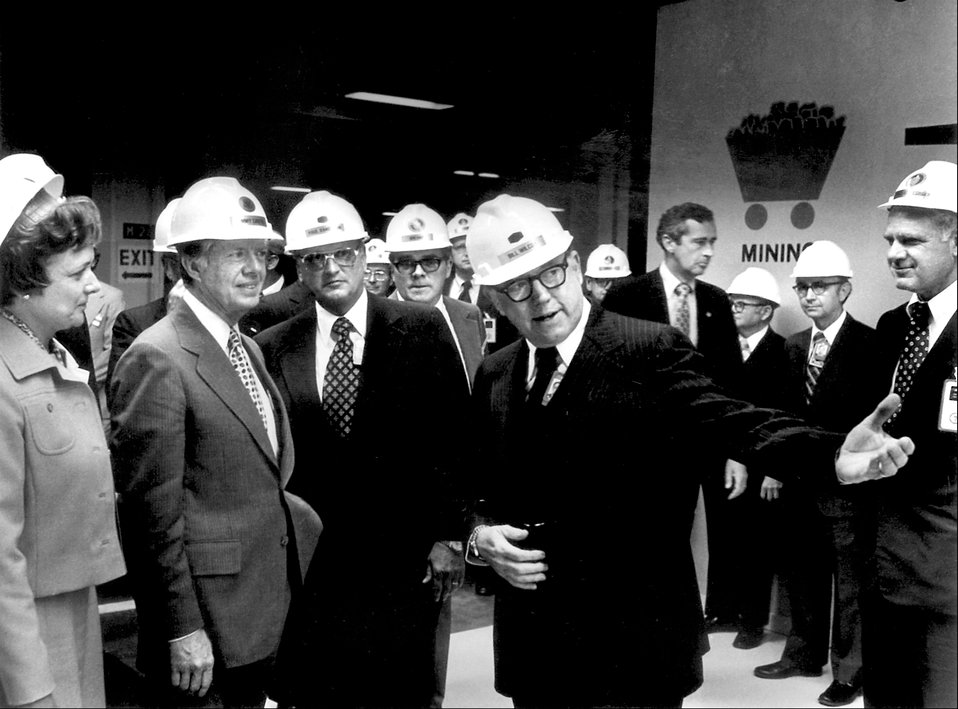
Pres. Jimmy Carter with Bill Wilcox Oak Ridge 1978

78-306a DOE photo Frank Hoffman 5-22-1978 K-25 Oak Ridge Tennessee